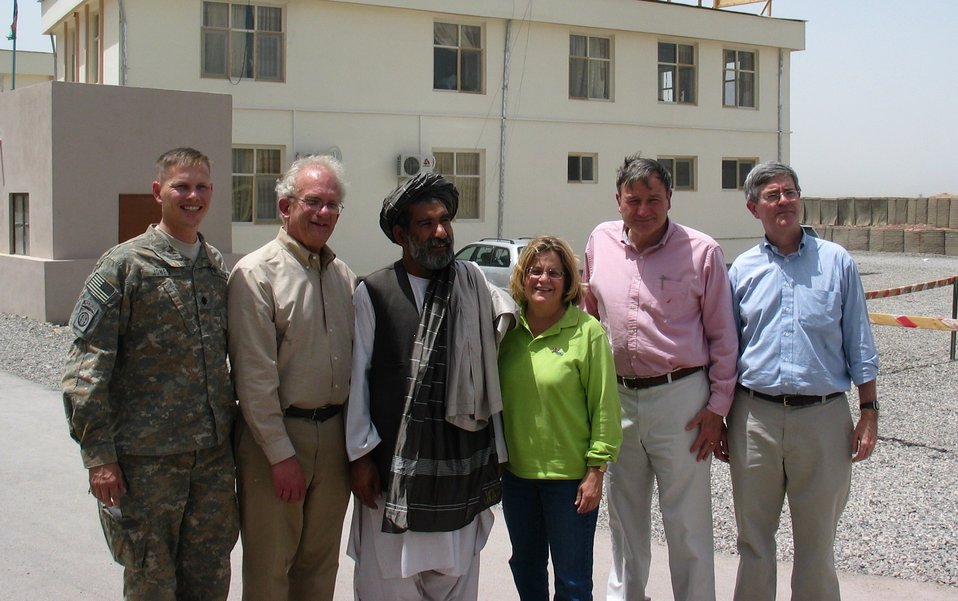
CODEL Berman